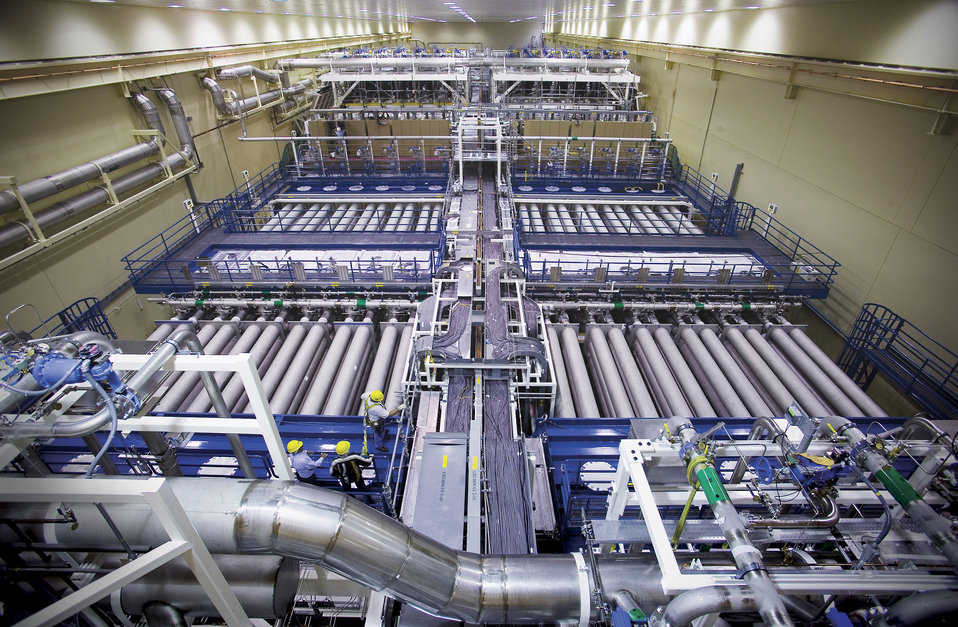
Seen from above, each of National Ignition Facility's two identical laser bays has two clusters of 48 beamlines, one on either side of the utility spine running down the middle of the bay/.

The National Ignition Facility at LLNL enables key programs and technologies that support DOE's National Nuclear Security Administration Defense Programs and LLNL missions, ensuring that the national's weapons remain safe, secure and reliable. NIF, one of the cornerstones of DOE's stockpile stewardship program, will integrate the inertial confinement fusion program into the overall stockpile stewardship program and foster the development of associated laser technologies.